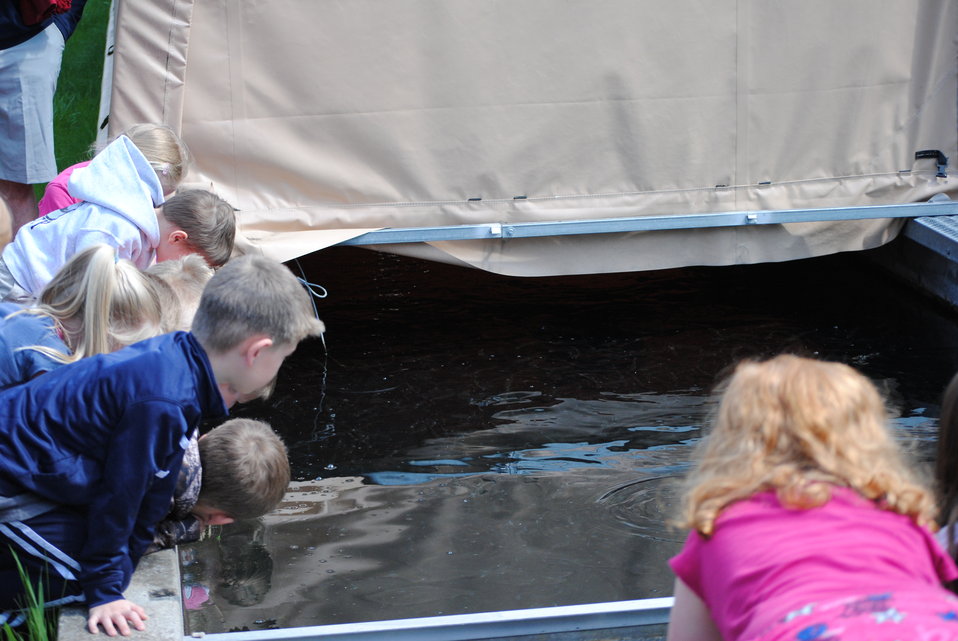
Creston National Fish Hatchery Kids Fish Day Event held in May Each Year

The Creston National Fish Hatchery, in association with the Flathead Community of Resource Educators (Flathead C.O.R.E.), holds an annual Fish Fun Fair to promote National Fishing and Boating Week.

Creston National Fish Hatchery invites 3rd graders from local schools to visit the hatchery and participate in learning stations, which may include fish anatomy, fish identification, fishing equipment and casting, hatchery tours, and other interesting exhibits with an aquatic focus.